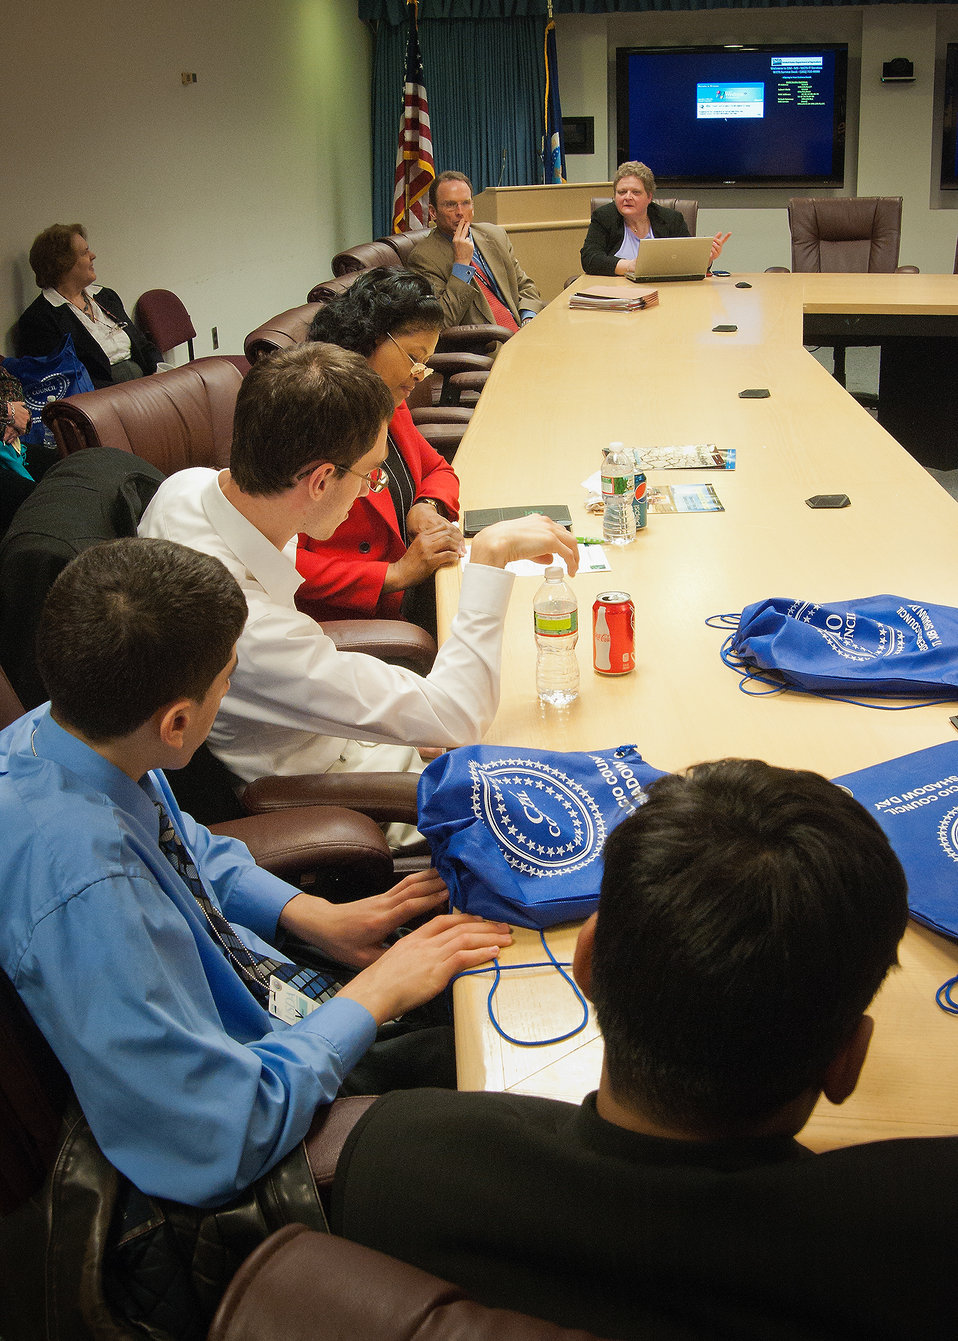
U.S. Department of Agriculture (USDA) Office of the Chief Information Officer (OCIO) Chief Information Officer Cheryl Cook explains the depth and breadth of Information technology services to students from Edison Academy in Fairfax, VA during the annual USDA Information Technology (IT) Job Shadow Day held by the USDA OCIO to introduce local high school students to careers in information technology in Washington, D.C. on Tuesday, Apr. 2, 2013.